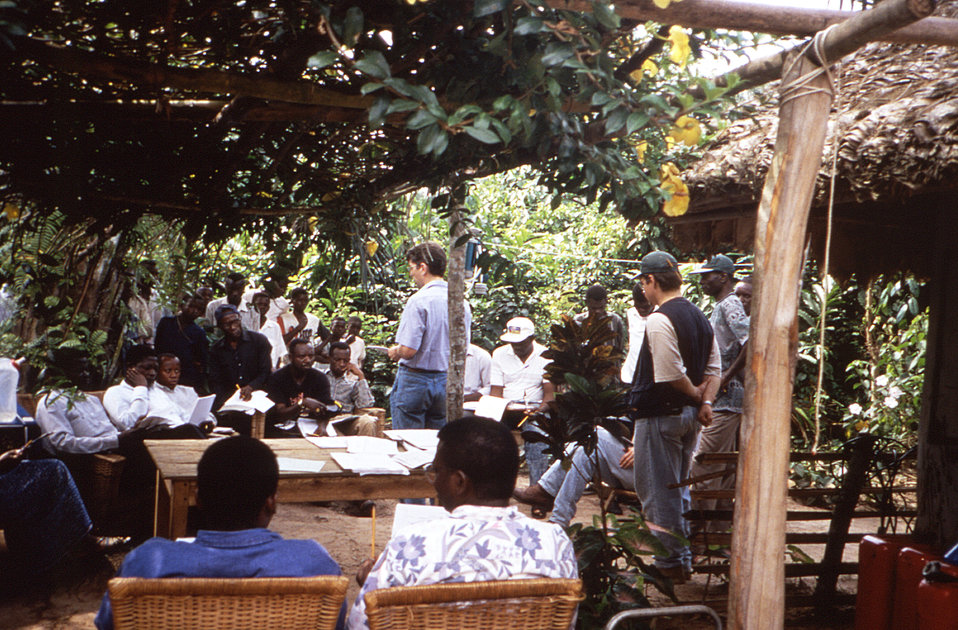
This image was created during an investigation into an outbreak of monkeypox, which took place in the Democratic Republic of the Congo (DRC), 1996 to 1997, formerly Zaire. This was a team gathering in an unknown location, which took place at the time of the DRC monkeypox epidemiologic study.